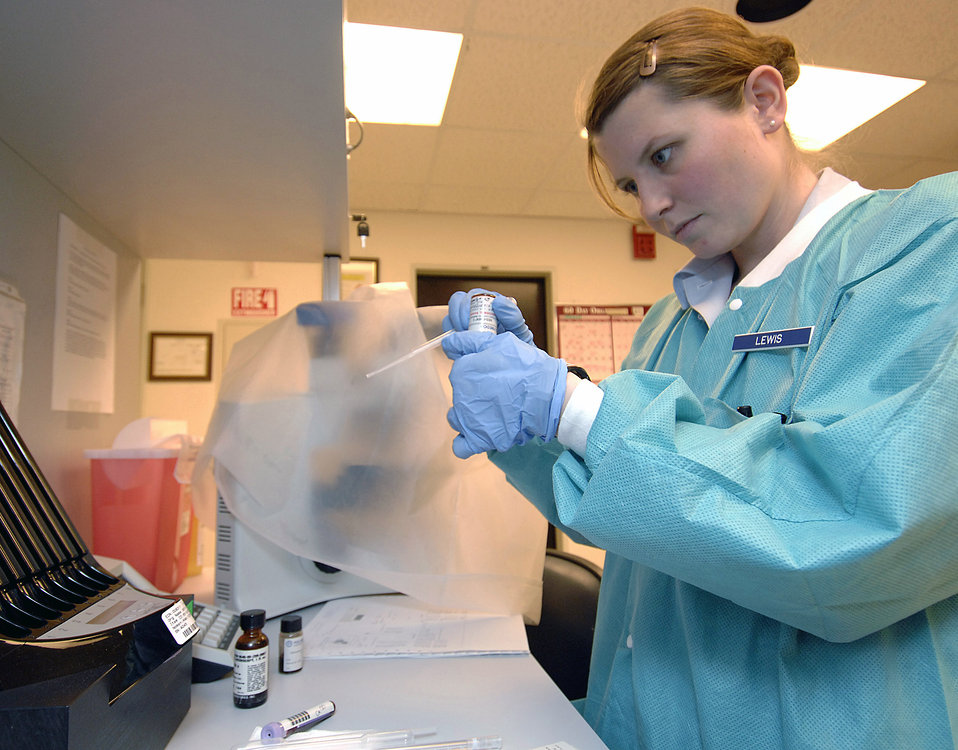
Incirlik officials celebrate Women's History Month

Senior Airman Christa Lewis performs an erythrocyte sedimentation rate test on a vial of blood March 9 at Incirlik Air Base, Turkey. The test measures the rate at which red blood cells settle in a predetermined amount of fluid. Women's History Month is celebrated throughout March to highlight American women of the past, present and future, and their accomplishments throughout the years. Airman Lewis is assigned to the 39th Medical Support Squadron.